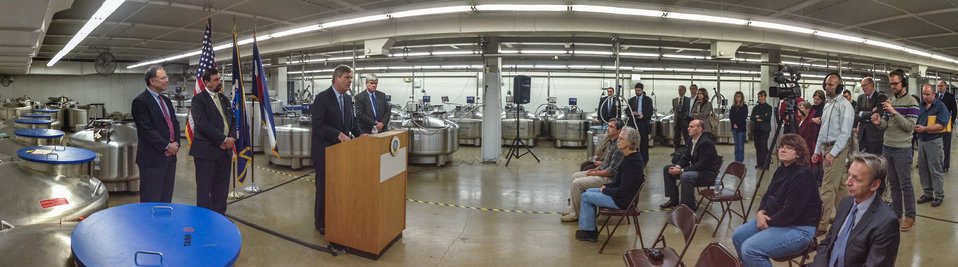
(L to R standing behind podium) Colorado State University (CSU) Dean Agricultural Sciences Dr. Craig Beyrouty, CSU President Dr. Anthony Frank, and U.S. Department of Agriculture (USDA) Agriculture Research Service (ARS) Northern Plains Area Director Dr. Larry Chandler listen to Agriculture Secretary Tom Vilsack speak to staff and media at USDA's ARS National Center for Genetic Resources Preservation (NCGRP) in Ft. Collins, CO on Wednesday, Nov. 6, 2013. NCGRP is the largest agricultural gene bank facility in the U.S. The NCGRP staff conducts groundbreaking research to develop more efficient and effective means for preserving plant and animal germplasm, and for better understanding the genetic structure of these invaluable materials. Gene banks around the world have adopted the research findings, preservation techniques, and specialized technology developed by the NCGRP: many international scientists travel to the NCGRP for research and training.